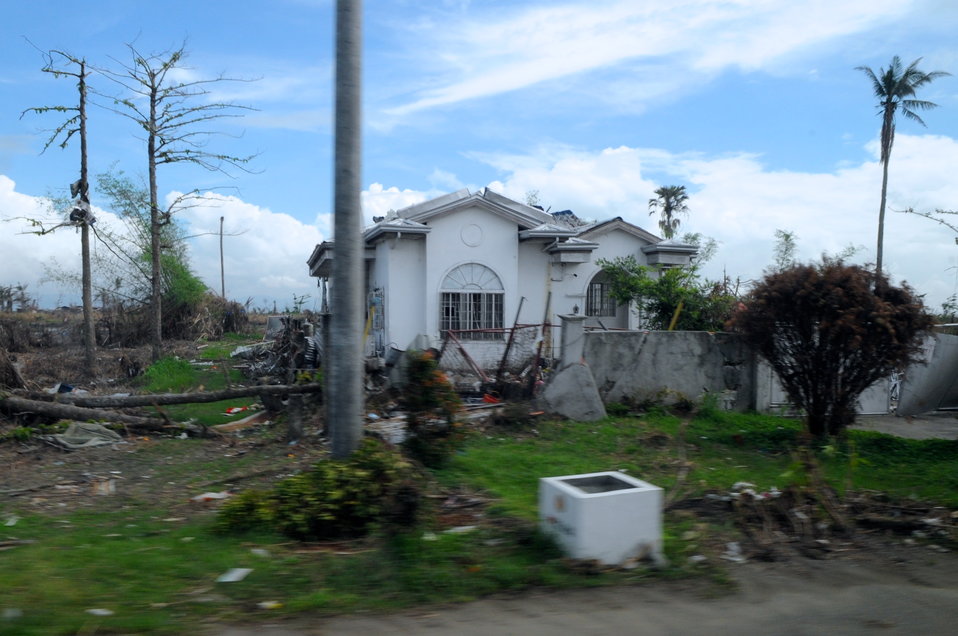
Secretary Kerry's Vehicle Passes a Home Damaged by Typhoon Haiyan

A home damaged by Typhoon Haiyan is seen from the vehicle transporting U.S. Secretary of State John Kerry as he arrived in Tacloban City, Philippines, to announce $25 million in fresh recovery aid on December 18, 2013.